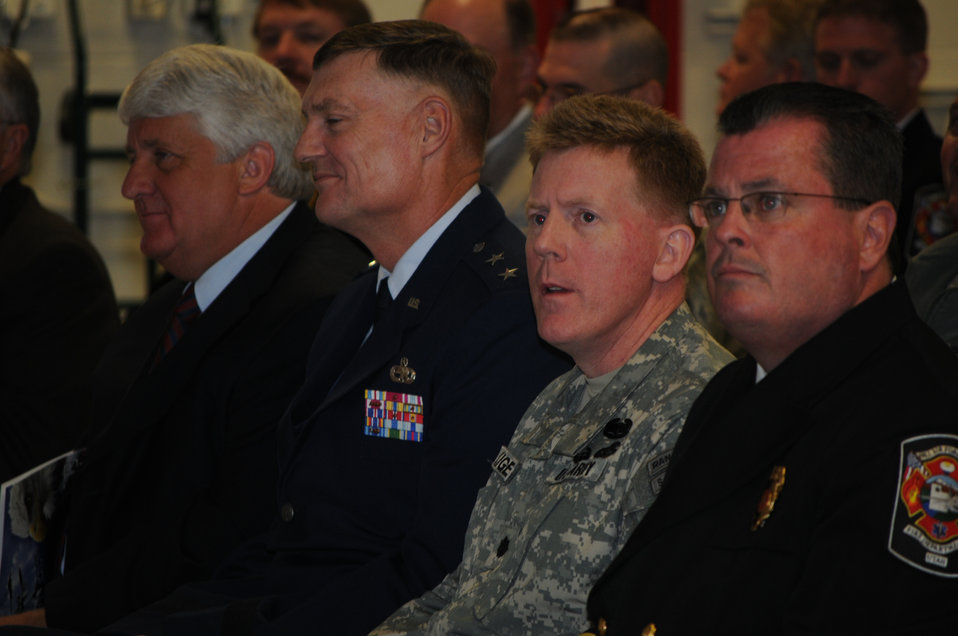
Corps completes first Gold-rated facility at Hill Air Force Base

(From left to right) U.S. Rep. Rob Bishop; U.S. Air Force Maj. Gen. Andrew E. Busch, Ogden Air Logistics Center commander; U.S. Army Lt. Col. Andrew Kiger, U.S. Army Corps of Engineers Sacramento District commander; and Fire Chief Paul Erickson listen to opening remarks at a ribbon-cutting ceremony for the new three-bay fire station at Hill Air Force Base, Utah, May 17, 2011.